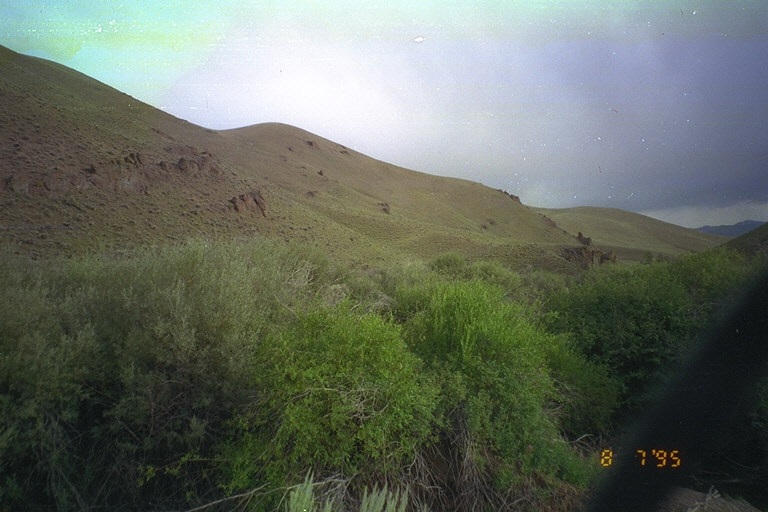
Riparian area Public Lands Salmon Field Office UCSC Upper Columbia Salmon Clearwater District